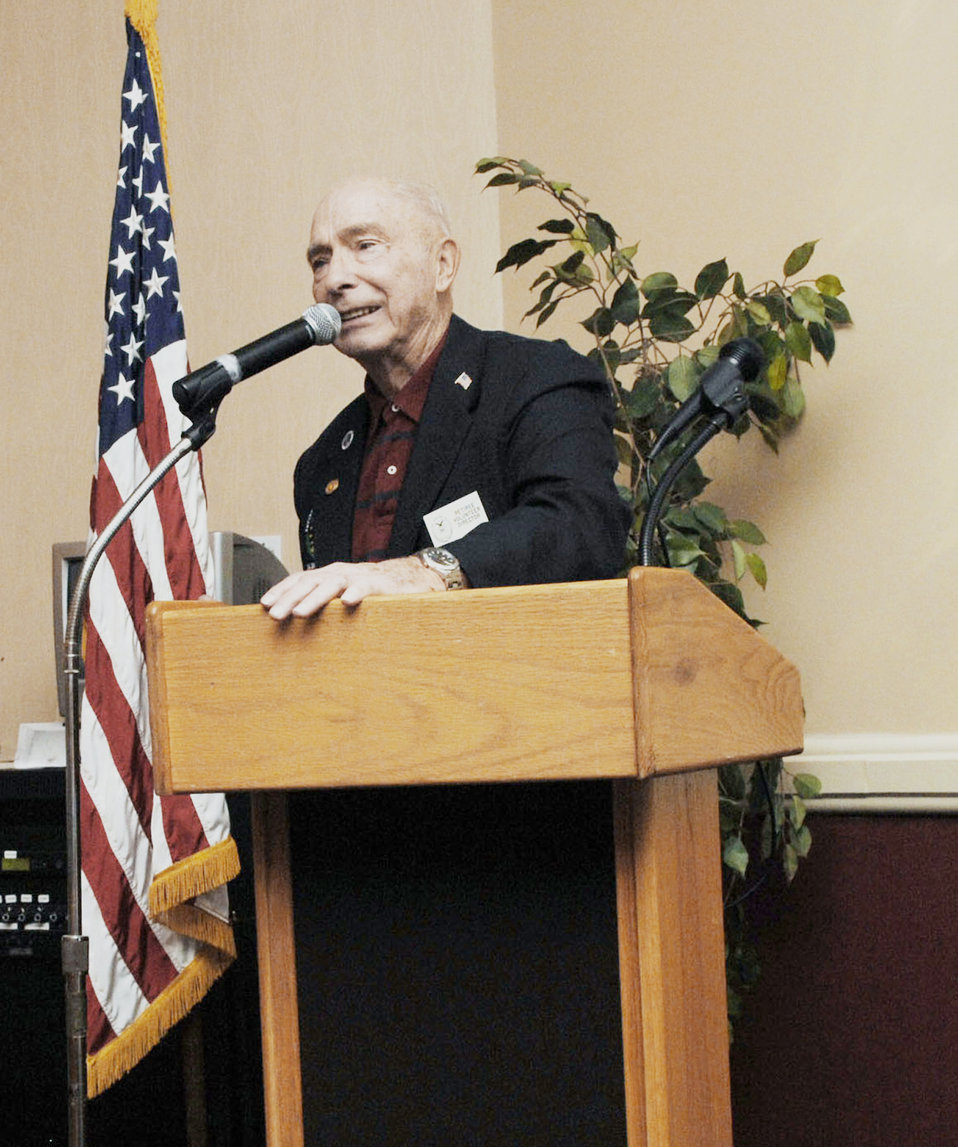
Retiree dedicates life to other's well-being

Retired Col. Steve dePyssler speaks at a function in 2008 at Barksdale Air Force Base, La. Colonel dePyssler is the Barksdale AFB Retiree Affairs Office director, and has worked for the past 70 years of his life.